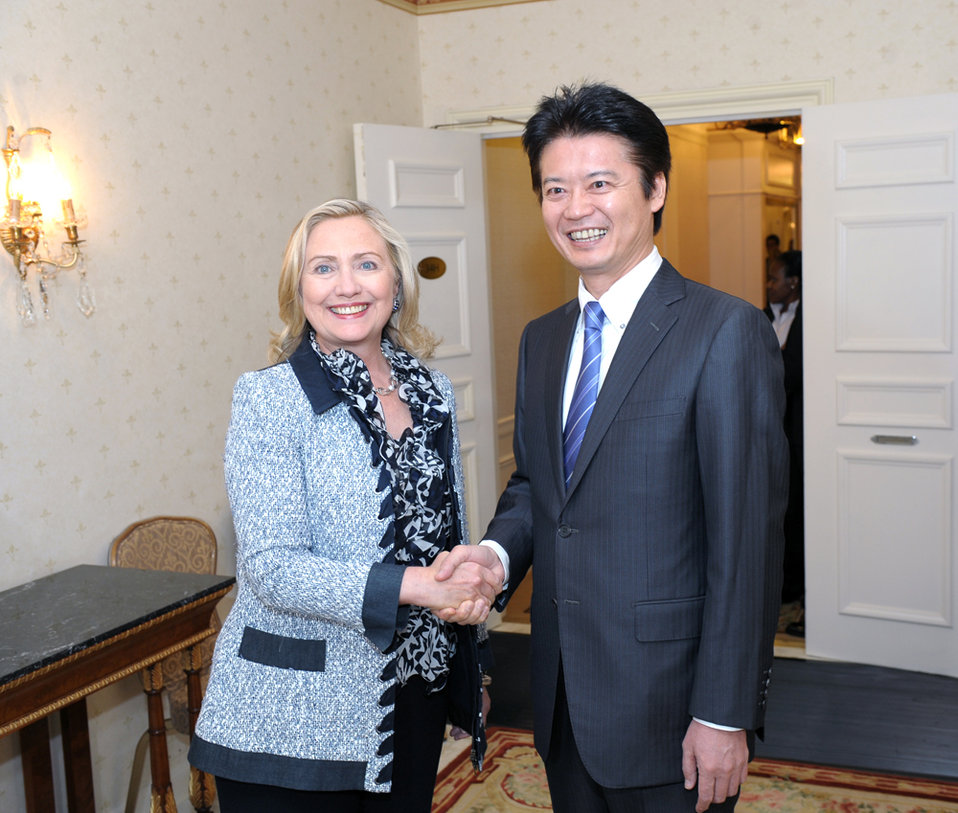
Secretary Clinton Meets With Japanese Foreign Minister Gemba Gemba

U.S. Secretary of State Hillary Rodham Clinton holds a bilateral meeting with Japanese Foreign Minister Gemba, in New York, New York, on September 19, 2011.